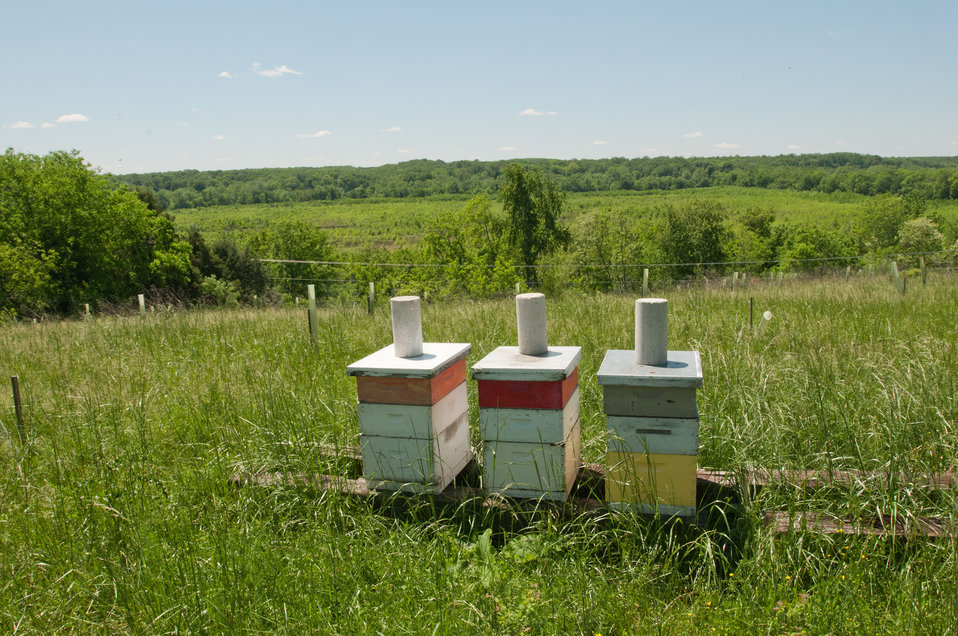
Three of the 80 bee hives of Brookview Farm in Manakin-Sabot, VA, on Thursday, May 5, 2011, that produce honey for Fall Line Farms, a local food cooperative in the Richmond, VA area that offers a wide variety of household food staples and specialty items on an ever changing inventory of fruits, vegetables, meats, soaps, eggs, cheeses, flowers, honey, pastas, sauces, syrups, baked goods, mushrooms, flour and grains. Suppliers post what they have on a Lulus Local Food online listing and customers can make their selection. Every Thursday suppliers deliver orders to, one of several pick-up points, designated by the customers in or around the Richmond area.